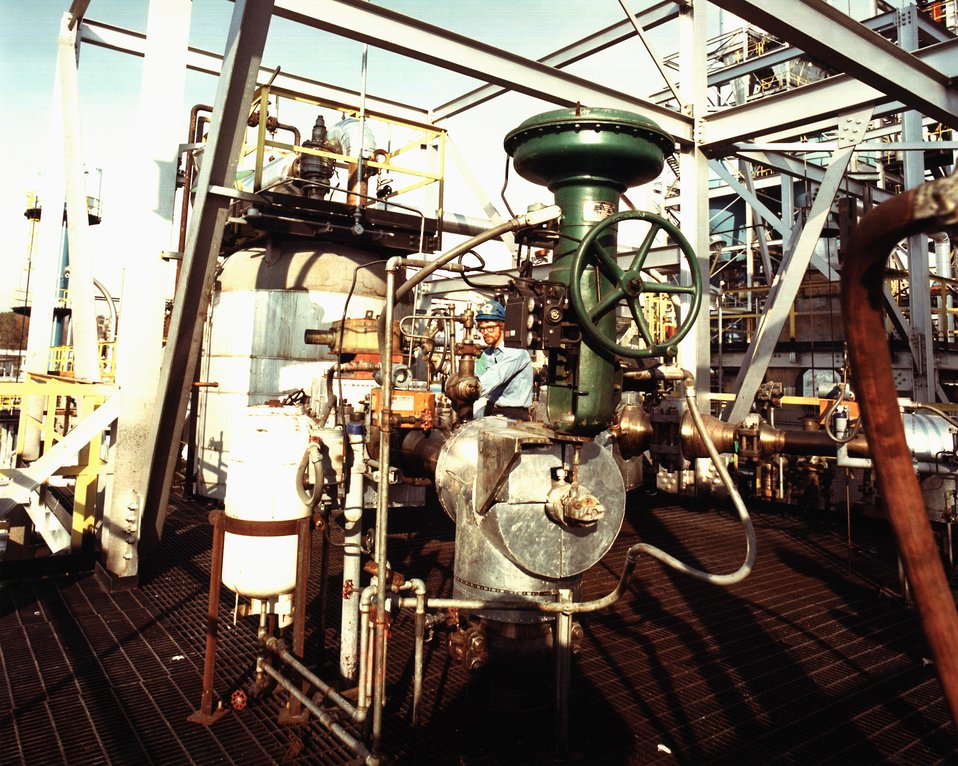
WORKER CHECKING EQUIPMENT AT THE NEARLY COMPLETE H-COAL PILOT PLANT